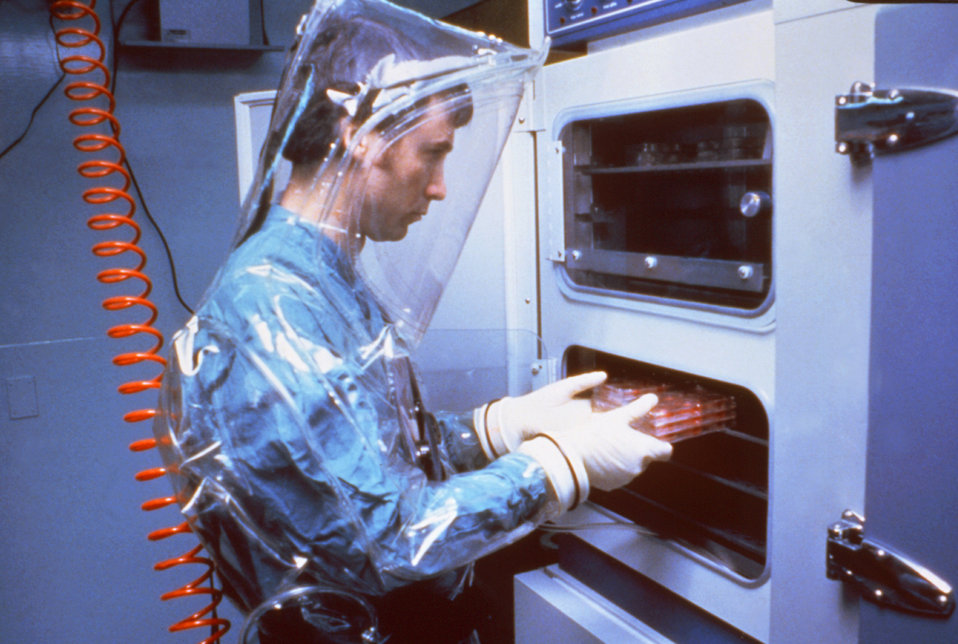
This is a 1981 photograph showing a CDC laboratorian while he's at work in a maximum containment, or "Hot Lab".